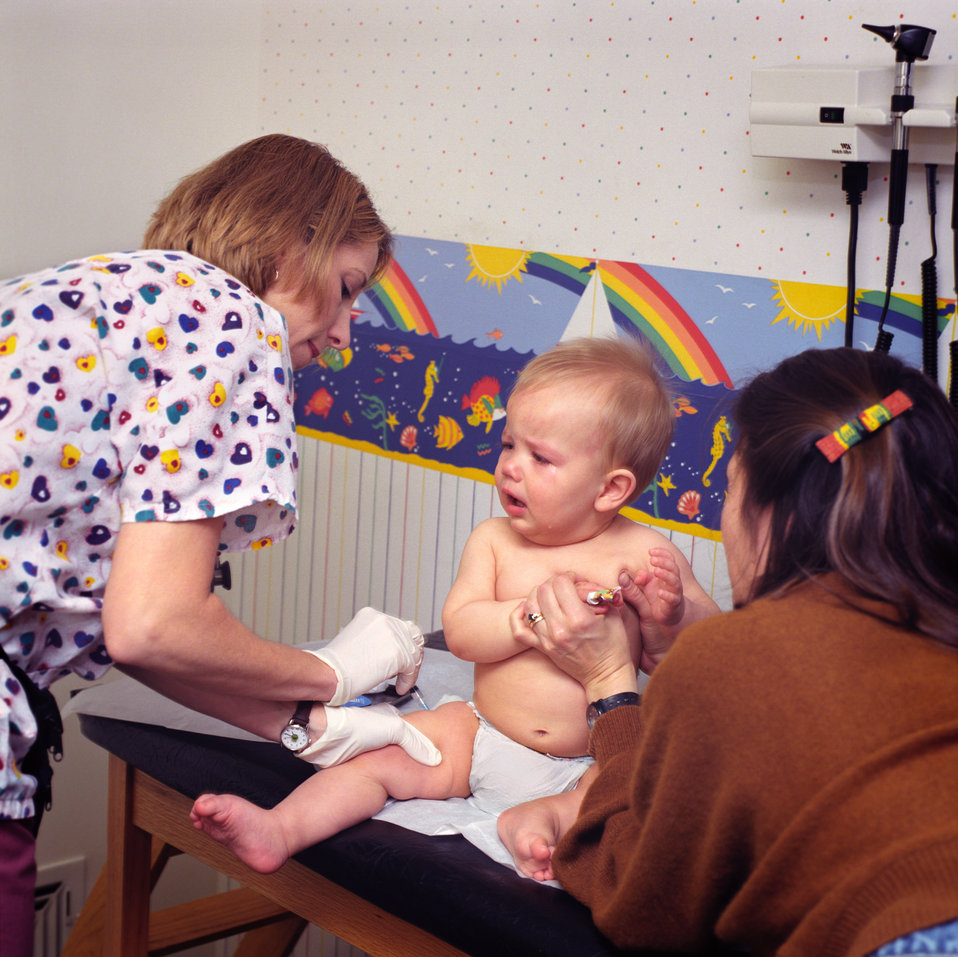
This photograph depicts a physician's assistant administering a Hepatitis B vaccination to a 9 mo. old infant.